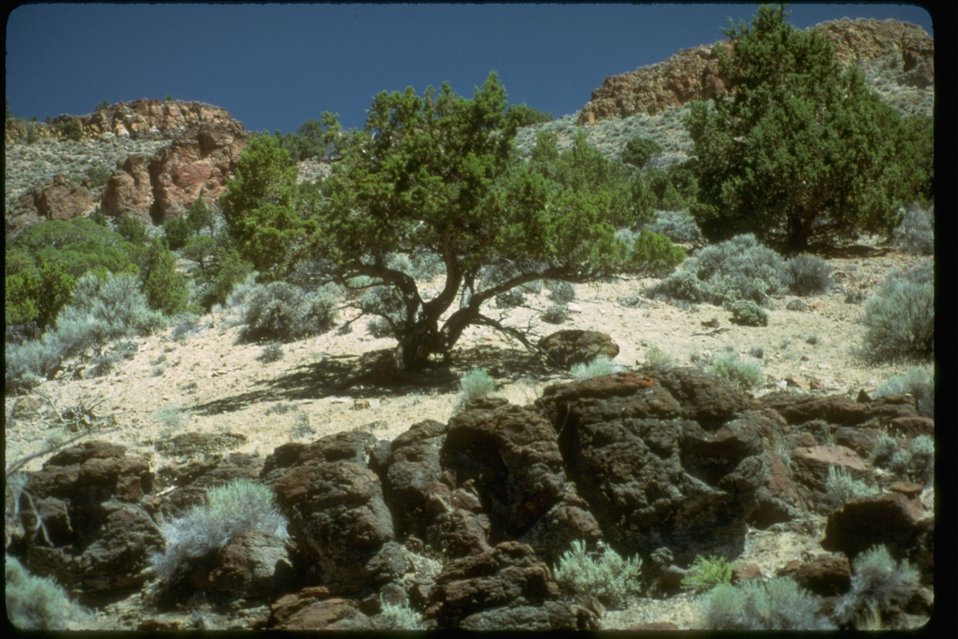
Juniper at the south end of the Fish Creek Rim. OR 1-117